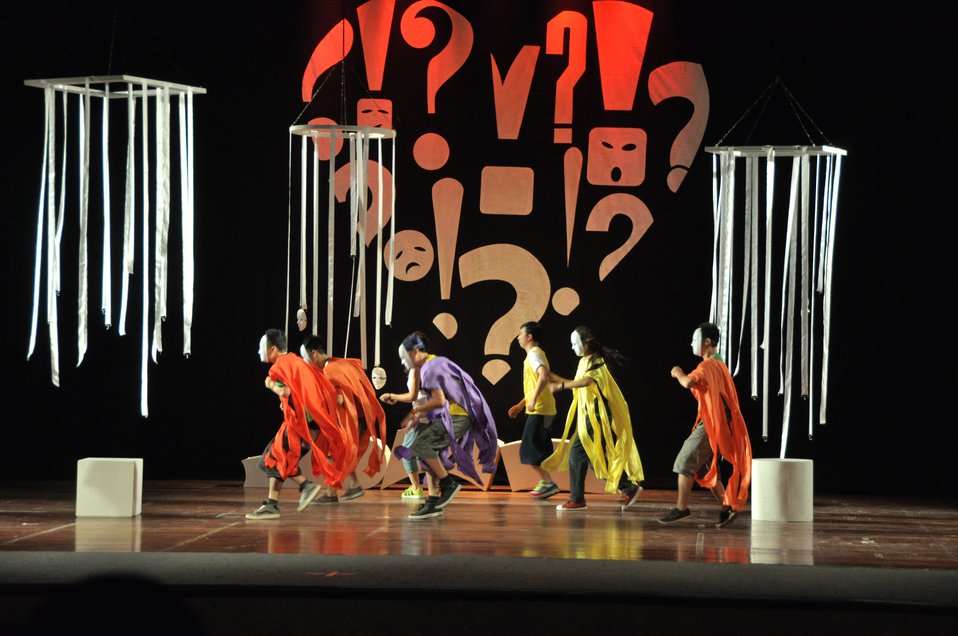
PEPFAR Musical Questions and Exclamations

Hanoi, May 17, 2013